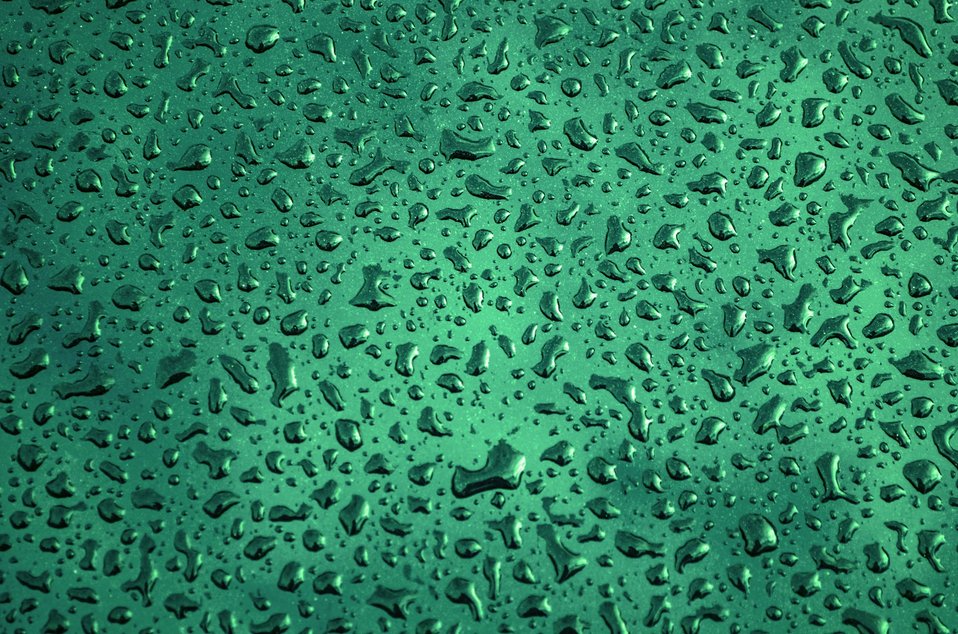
Water drops.